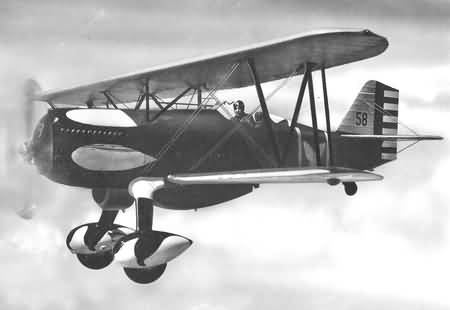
Curtiss P-6E Hawk assigned to the 17th Pursuit Squadron, 1st Pursuit Group based at Selfridge Field, Mount Clemens, Mich. around 1932-34.